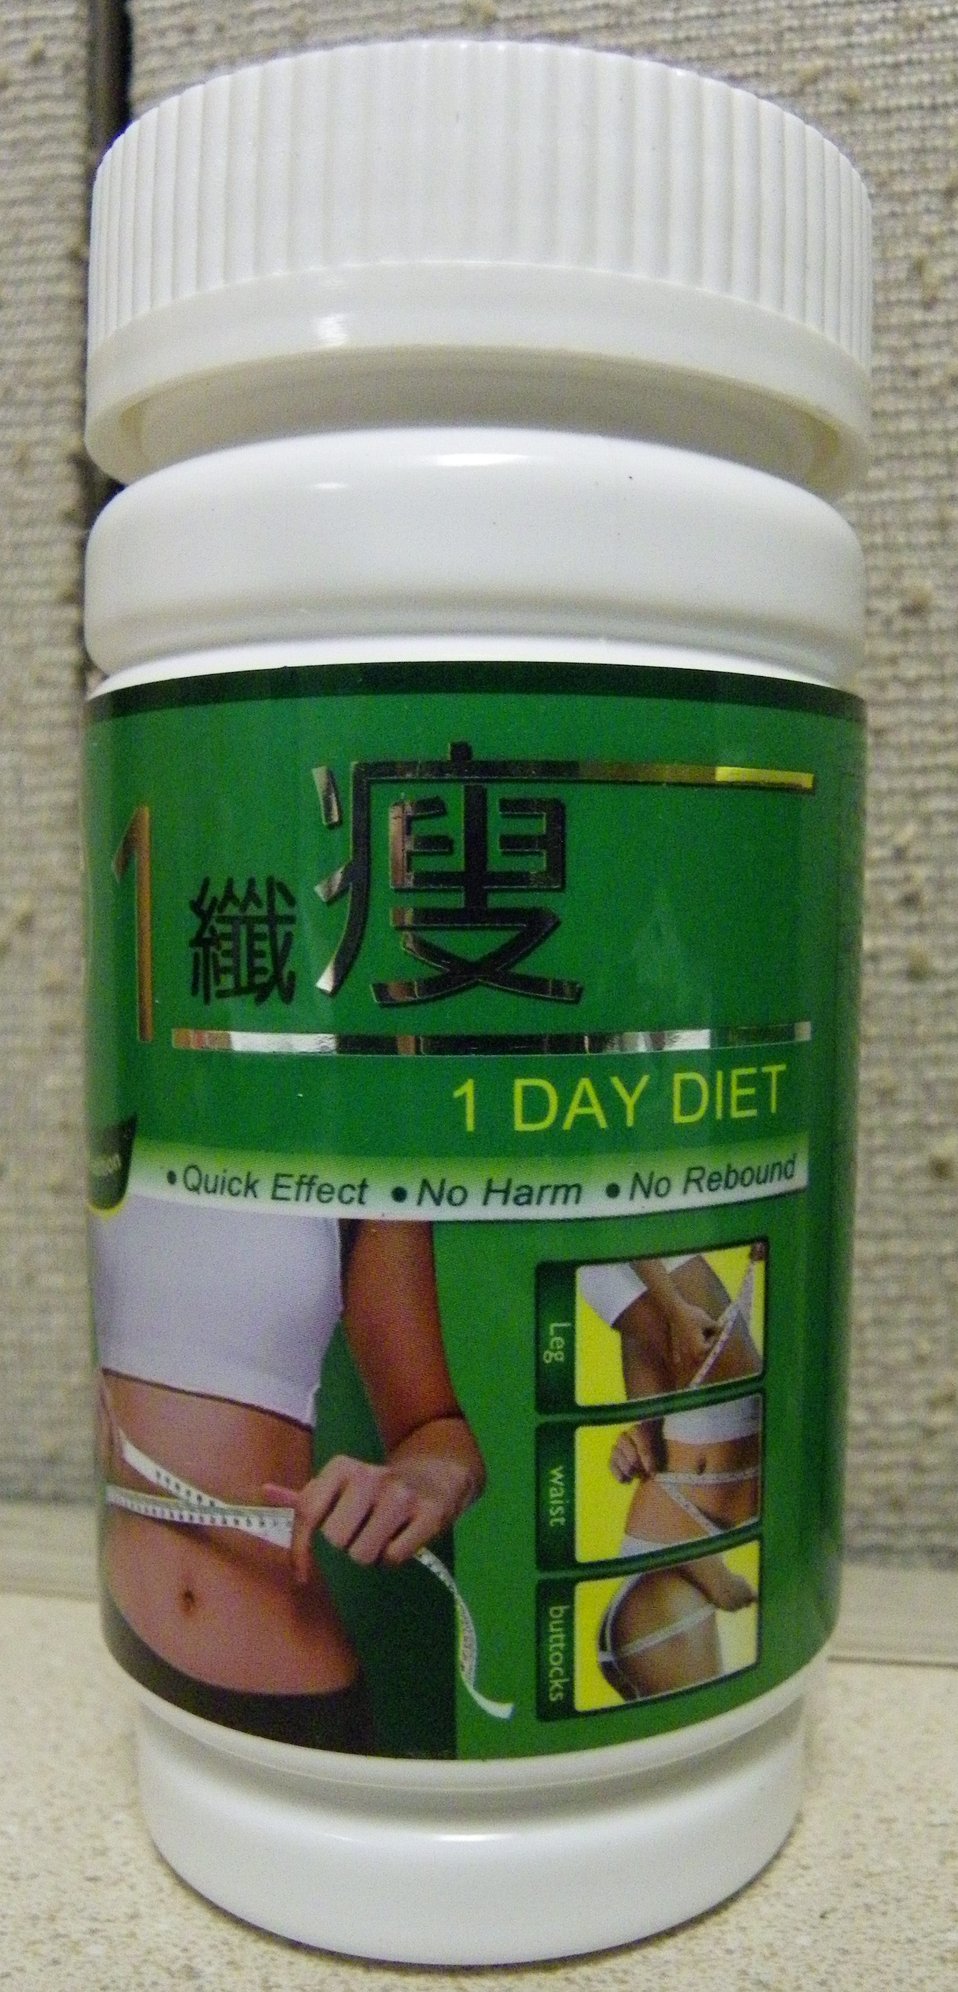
1 Day Diet

November 21, 2013 - The FDA is advising consumers not to purchase or use '1 Day Diet,' a product promoted and sold for weight loss. The product was found to contain undeclared sibutramine. For more information, go to www.fda.gov/Drugs/ResourcesForYou/Consumers/BuyingUsingMe...

And read this Consumer Update: Beware of Fraudulent ‘Dietary Supplements’